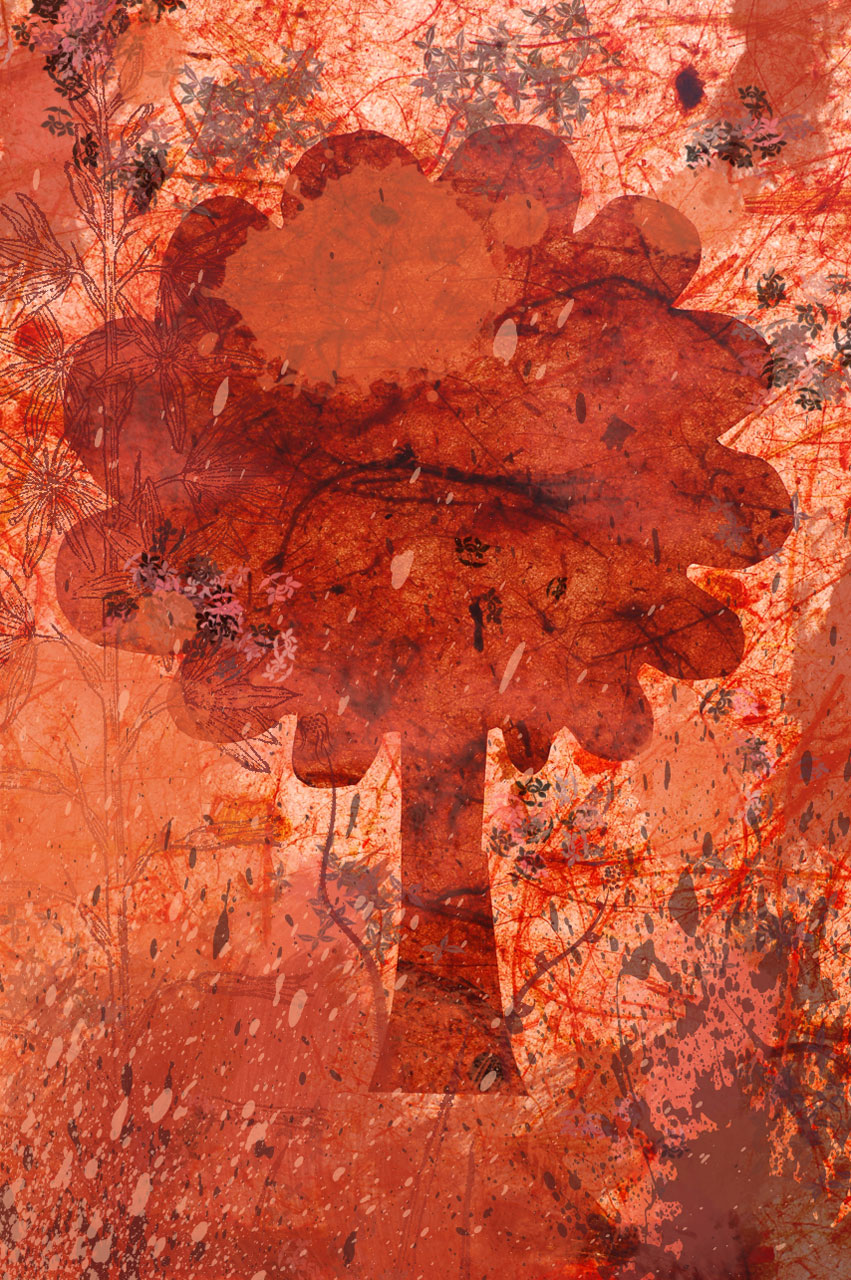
Autumn tree background

Autumn tree grungy style background.